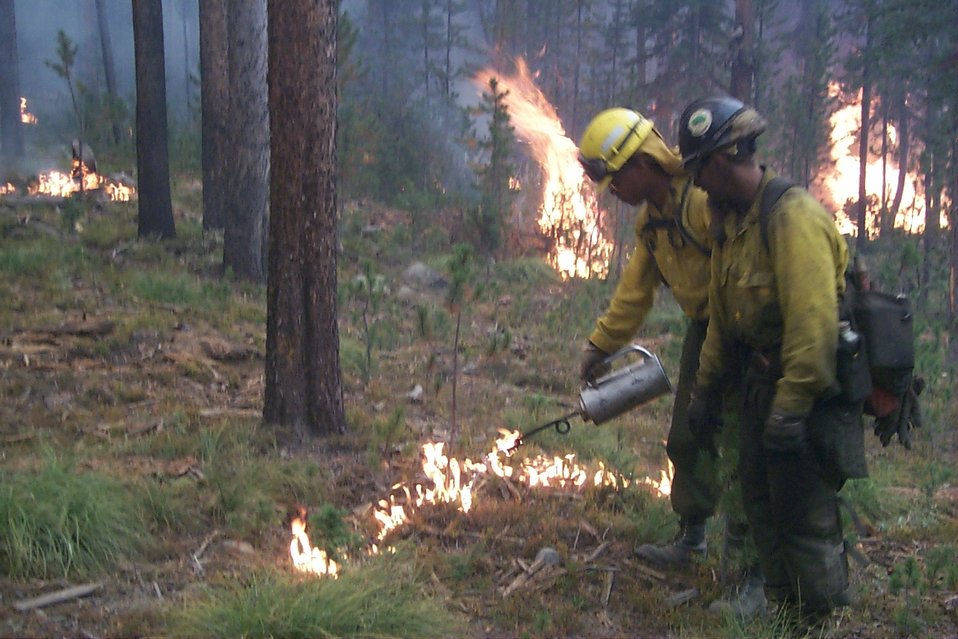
Controlled burn Fire Clearwater Fire Salmon Field Office USRD Upper Snake River District